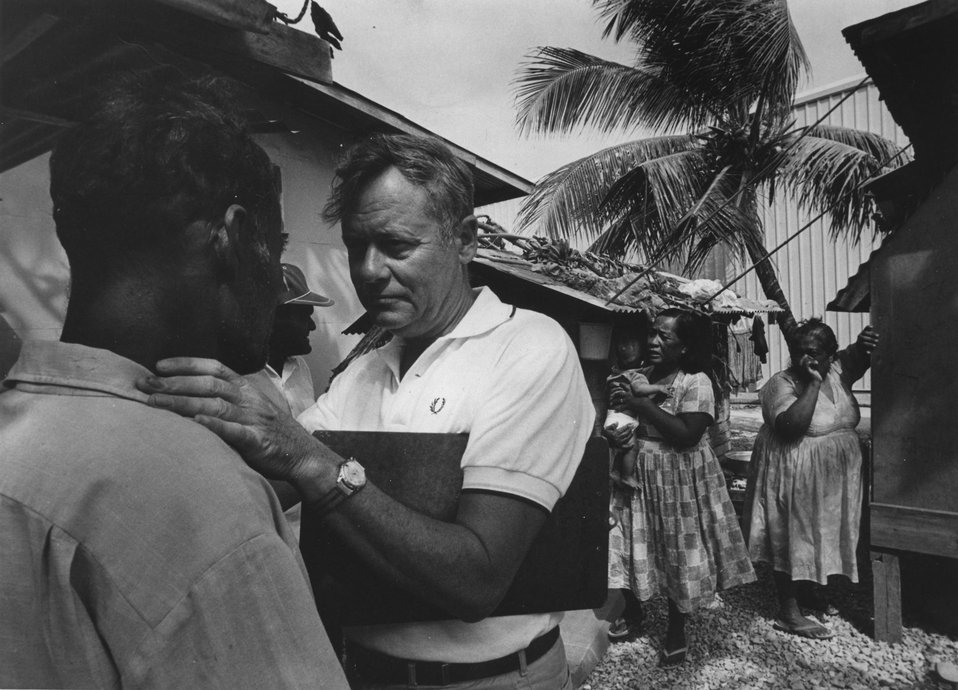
Medical team conducting annual medical examinations of Marshallese people who were exposed to radioactive fallout from an atmospheric nuclear weapons test in 1954.